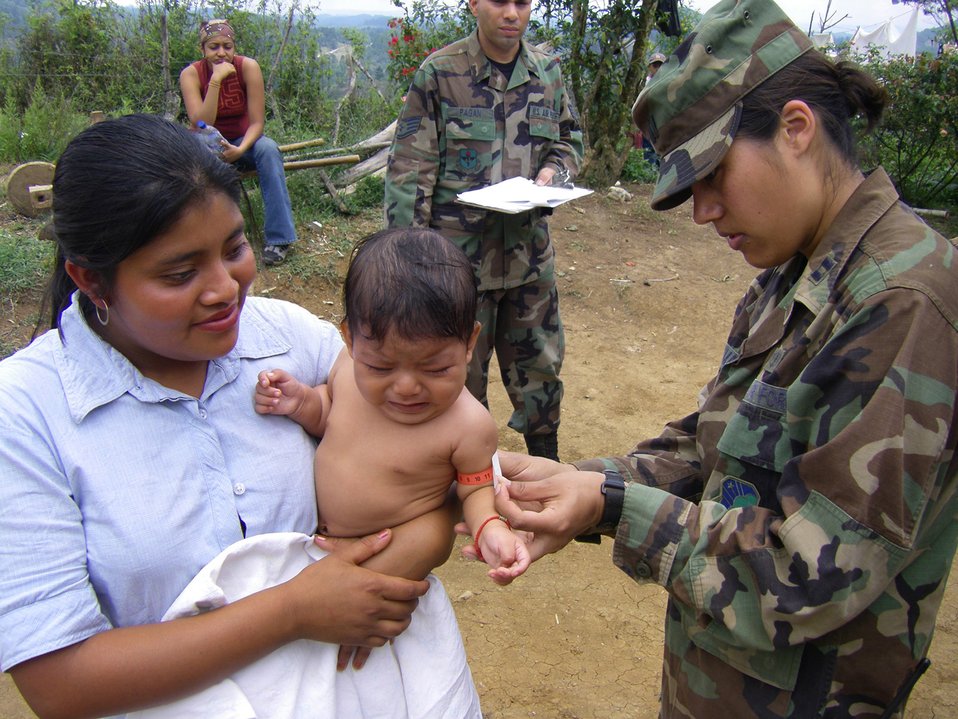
Wilford Hall pediatricians in Honduras

Capt. (Dr.) Larrisa Newman measures the mid-upper arm circumference of a child in Honduras June 3 to evaluate for malnutrition. Every four months, teams of U.S. military pediatricians and nutritionists drive and hike to the homes of people living in remote areas of Honduras to screen for malnutrition and anemia as well as provide basic medical care. Doctor Newman is a pediatric resident from Wilford Hall Medical Center in San Antonio, Texas.